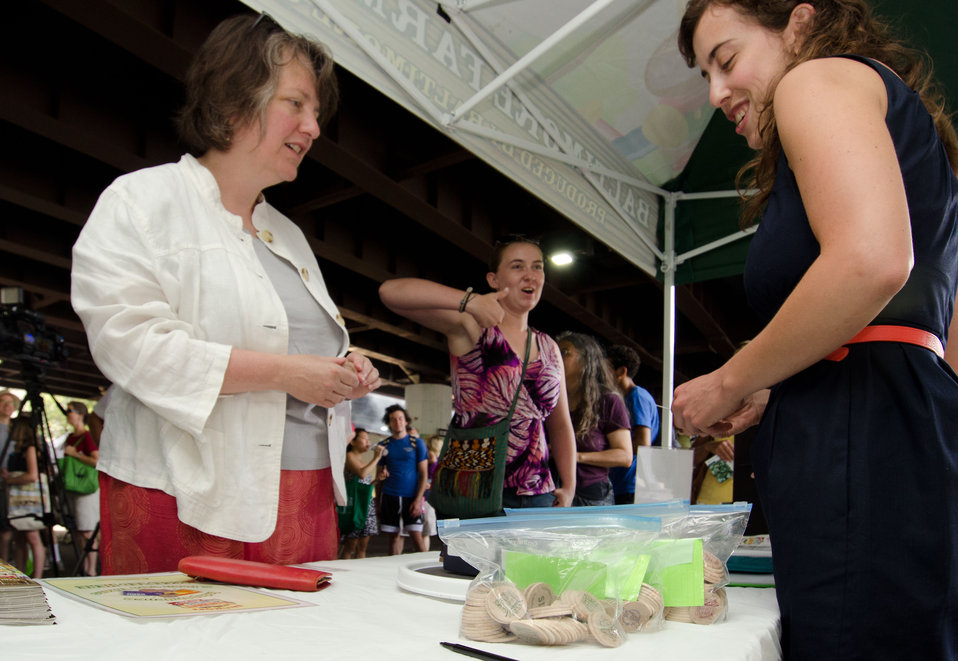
Abby Carmean (center) shows her enthusiasm about the token system as Agriculture Deputy Secretary Kathleen Merrigan (left) receives her wooden tokens after using her debit card at Baltimore’s Farmers Market and Bazaar Welcome Center in Baltimore, MD on Sunday, July 8, 2012. The wireless portable terminals accept the U.S. Department of Agriculture’s (USDA) Food Nutrition Service’s (FNS) Supplemental Nutrition Assistance Program (SNAP) Electronic Benefits Transfer (EBT) cards, Baltimore Bucks, and debit cards. “SNAP participation at farmers markets helps provide fresh fruit and vegetables to families and expands the customer base for local farmers in the Delmarva area, a win-win for agriculture and local communities,” said Agriculture Deputy Secretary Kathleen Merrigan. “And when we couple SNAP access at farmers markets with strategies like education, cooking demonstrations, and community support in the Baltimore area, consumption of healthy foods has the potential to grow even more.”